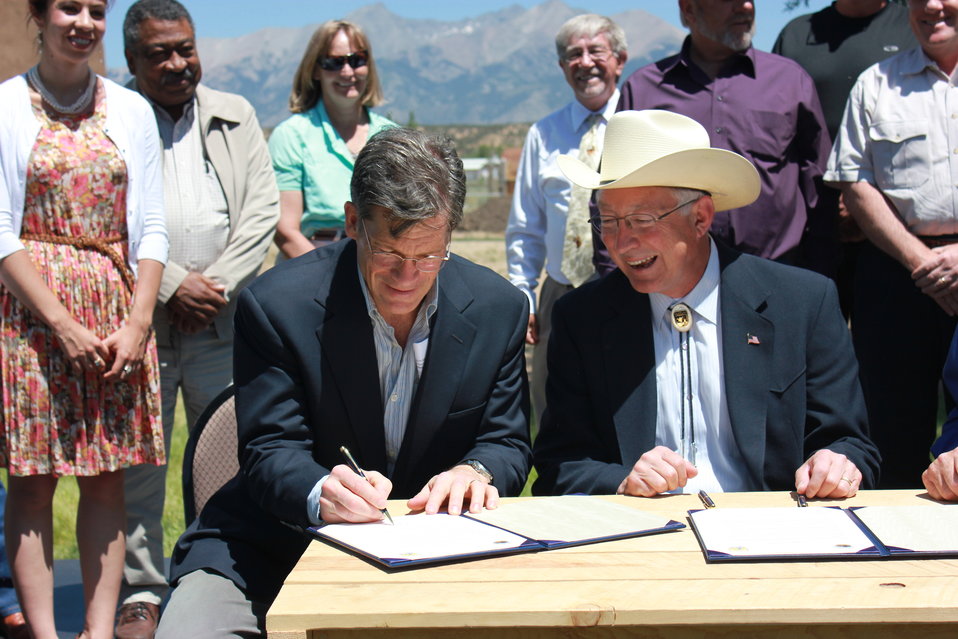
Historic Conservation Easement in Sangre de Cristo Mountains